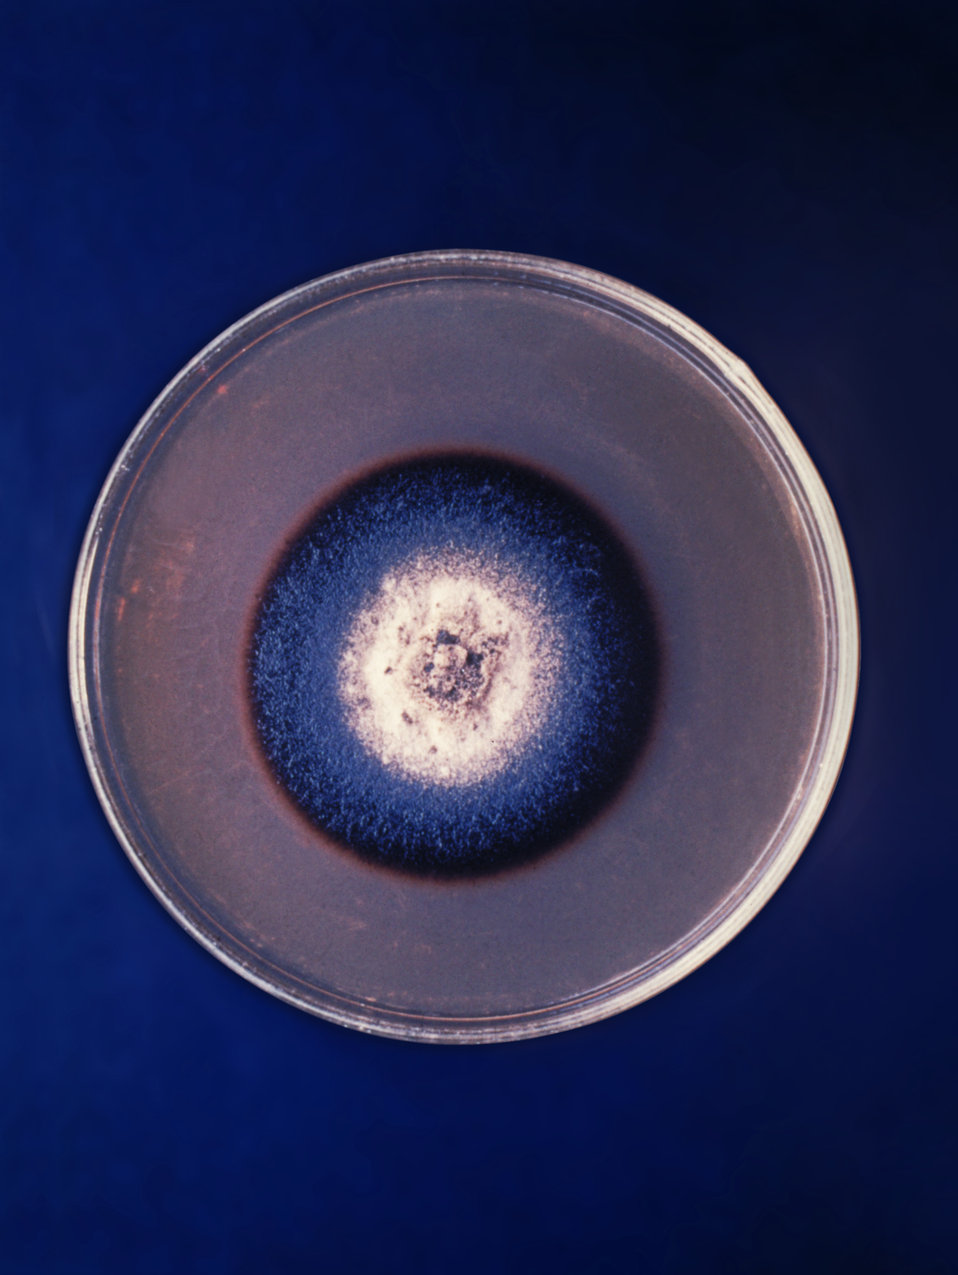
This is a plate culture of Piedraia hortae, strain A272.